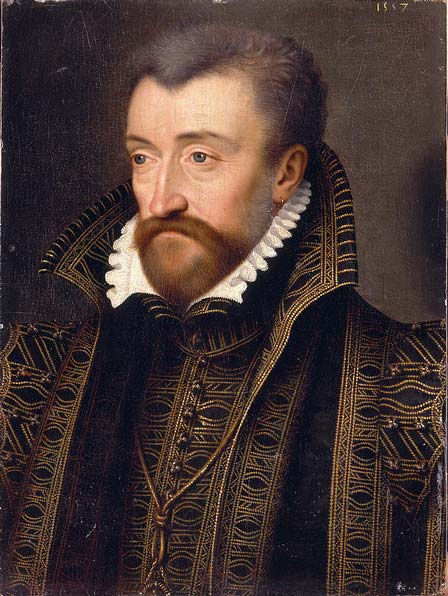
Antoine-de-bourbon